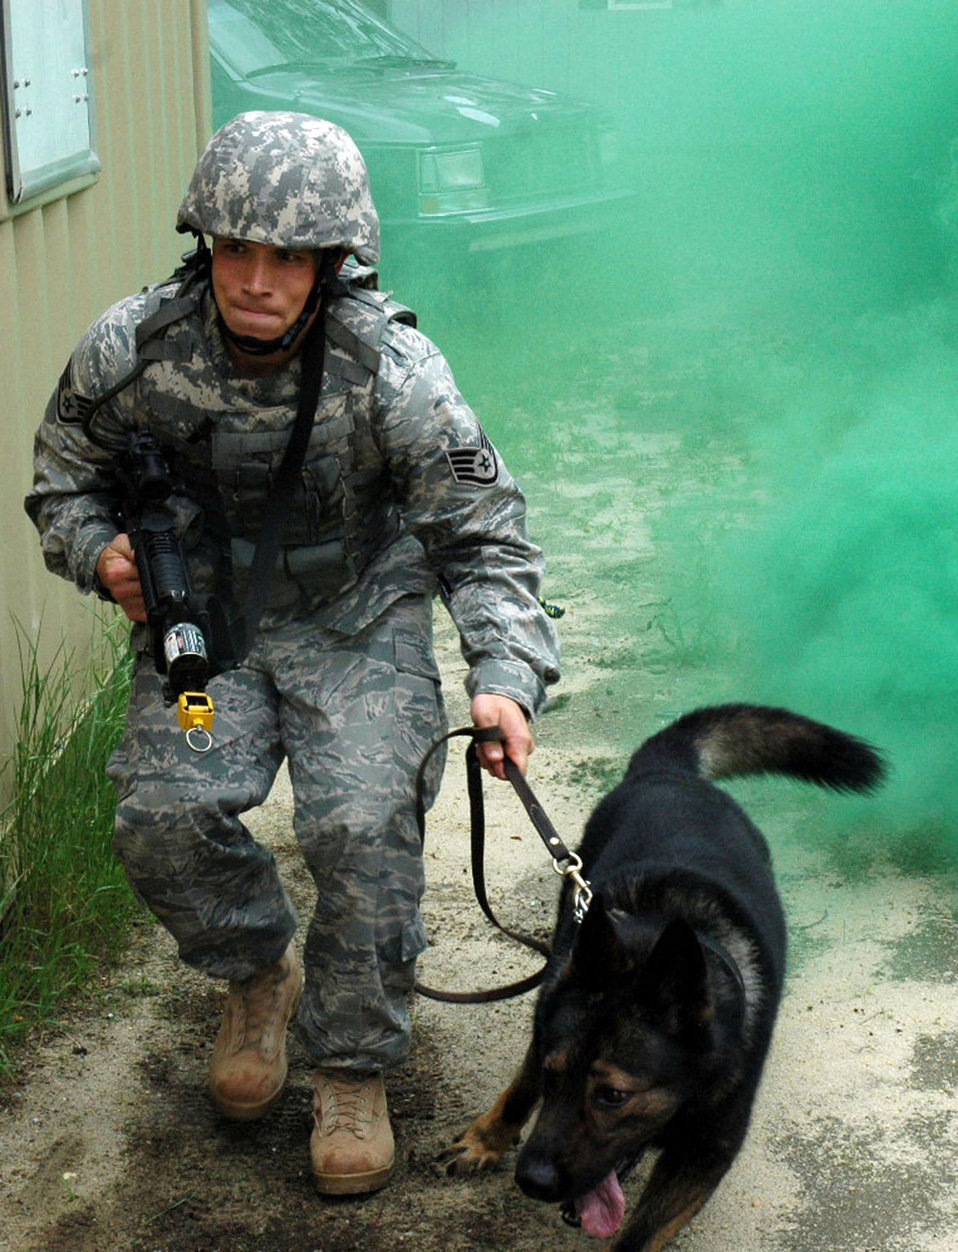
U.S. Air Force Expeditionary Center: Phoenix Warrior Training Course

Staff Sgt. Clifford Hartley and his military working dog, Cir participate in canine military operations in urban terrain training June 5. at Naval Air Engineering Station Lakehurst, N.J. Their training was part of the Air Force Phoenix Warrior Course which trains security forces for upcoming deployments. The course is operated by members of Air Force Expeditionary Center at Fort Dix, N.J. Sergeant Hartley and Cir are from the 437th Security Forces Squadron, Charleston Air Force Base, S.C.